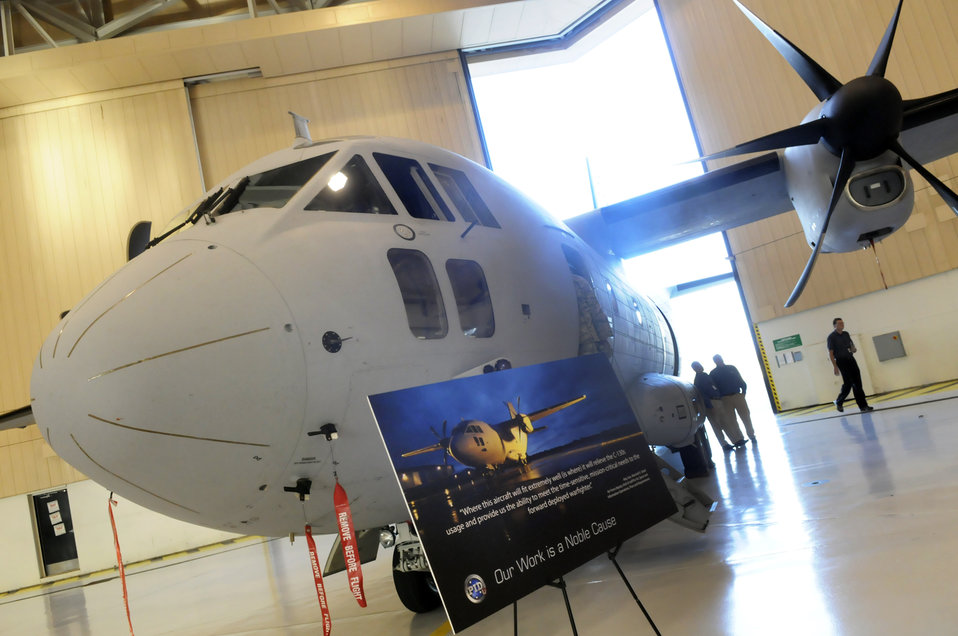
C-27 sits in the hangar during the C-27J JCA Schoolhouse grand opening

A C-27 sits in the hangar during the C-27J JCA Schoolhouse grand opening ceremony Dec. 9.